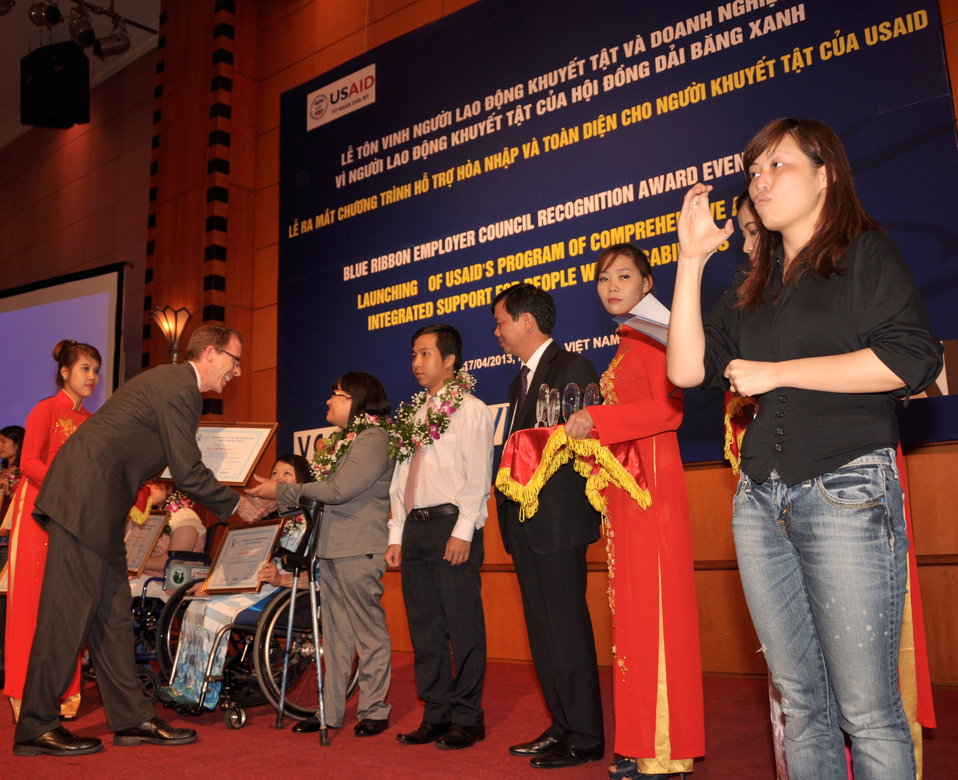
USAID Mission Director Joakim Parker awards employees with disabilities

Hanoi, April 17, 2013